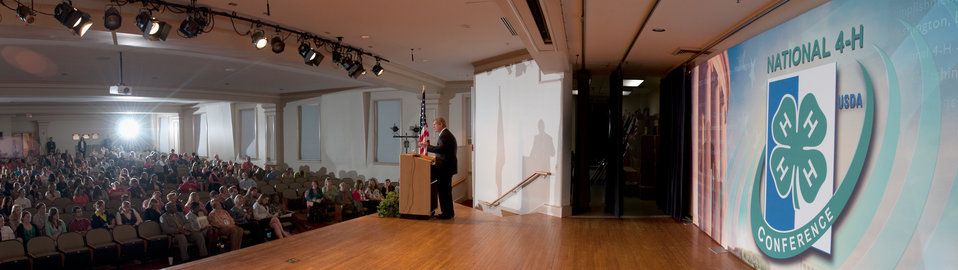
(Virtual panorama) U.S. Department of Agriculture (USDA) Secretary Tom Vilsack delivers the keynote remarks to approximately 300 youth members, Extension Educators and 4-H Adult Volunteers from across the nation, as well as U.S. Territories at the 2013 National 4-H Conference, on Monday, April 8, 2013 in Chevy Chase, MD. Also speaking at the event is Agriculture Departmental Management Office of Advocacy and Outreach Director Carolyn Parker (front row, second from left) and National Institute of Food and Agriculture Director Dr. Sonny Ramaswamy (right section, front row, left). The youth delegates are in grades 10-12 (15-19 years old). The purpose of the conference is to 1) engage 4-H youth in personal development experiences that will increase knowledge, resources, and skills; 2) discuss topics affecting youth and 4-H programming nationwide; and 3) empower and mobilize 4-H youth to create positive social change in their communities in a meaningful and genuine way. The conference also reinforces the rich history of 4-H and its valuable tie to USDA, Cooperative Extension and the Land-grant University system.USDA Photo illustration by Lance Cheung.